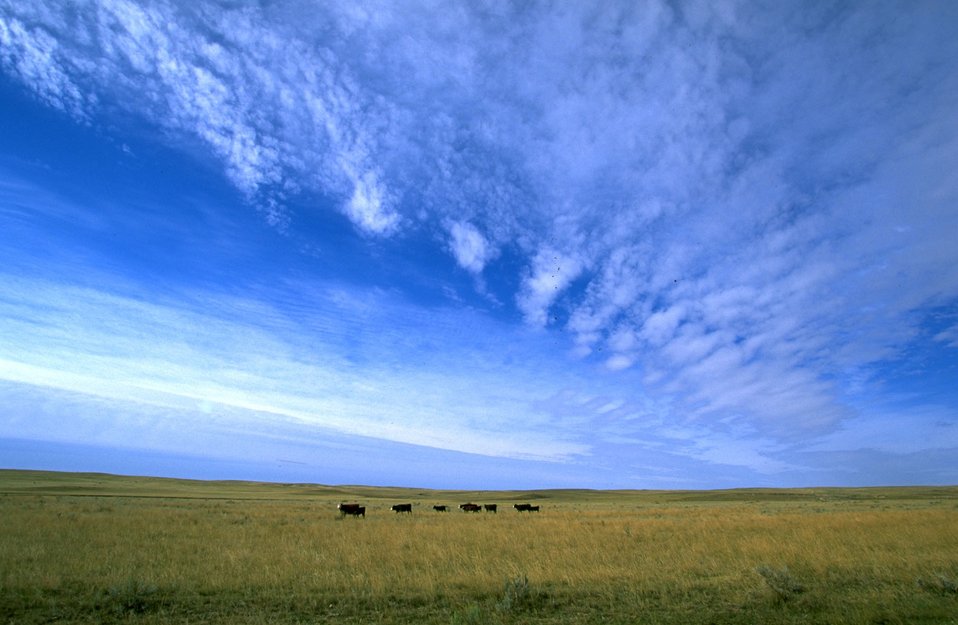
Cattle grazing under the Big Sky in eastern Montana